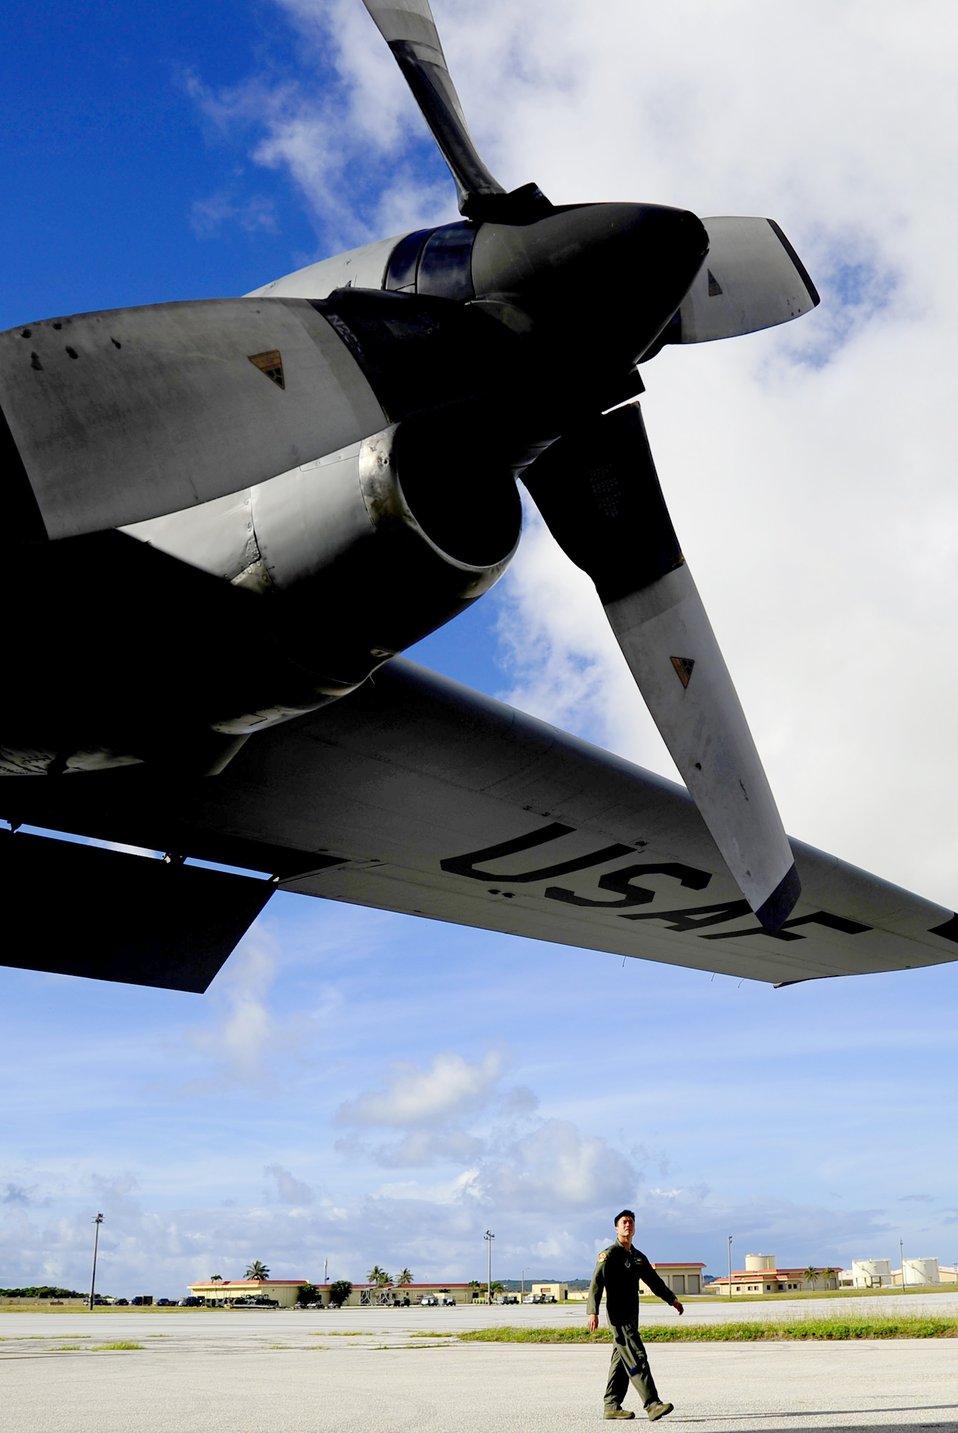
Cope North

Capt. Ryan Wong performs a preflight walk-around check near a C-130 Hercules Feb. 23, 2011, during exercise Cope North at Andersen Air Force Base, Guam. Captain Wong is a C-130 pilot from the 36th Airlift Squadron at Yokota Air Base, Japan.